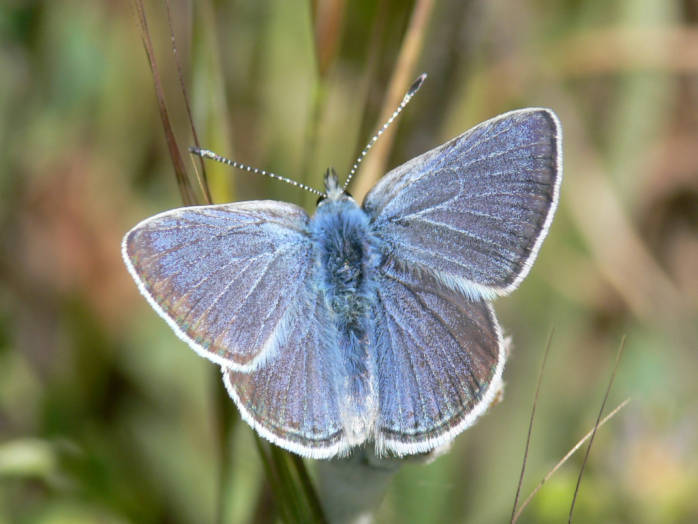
Mission Blue Butterfly (endangered)